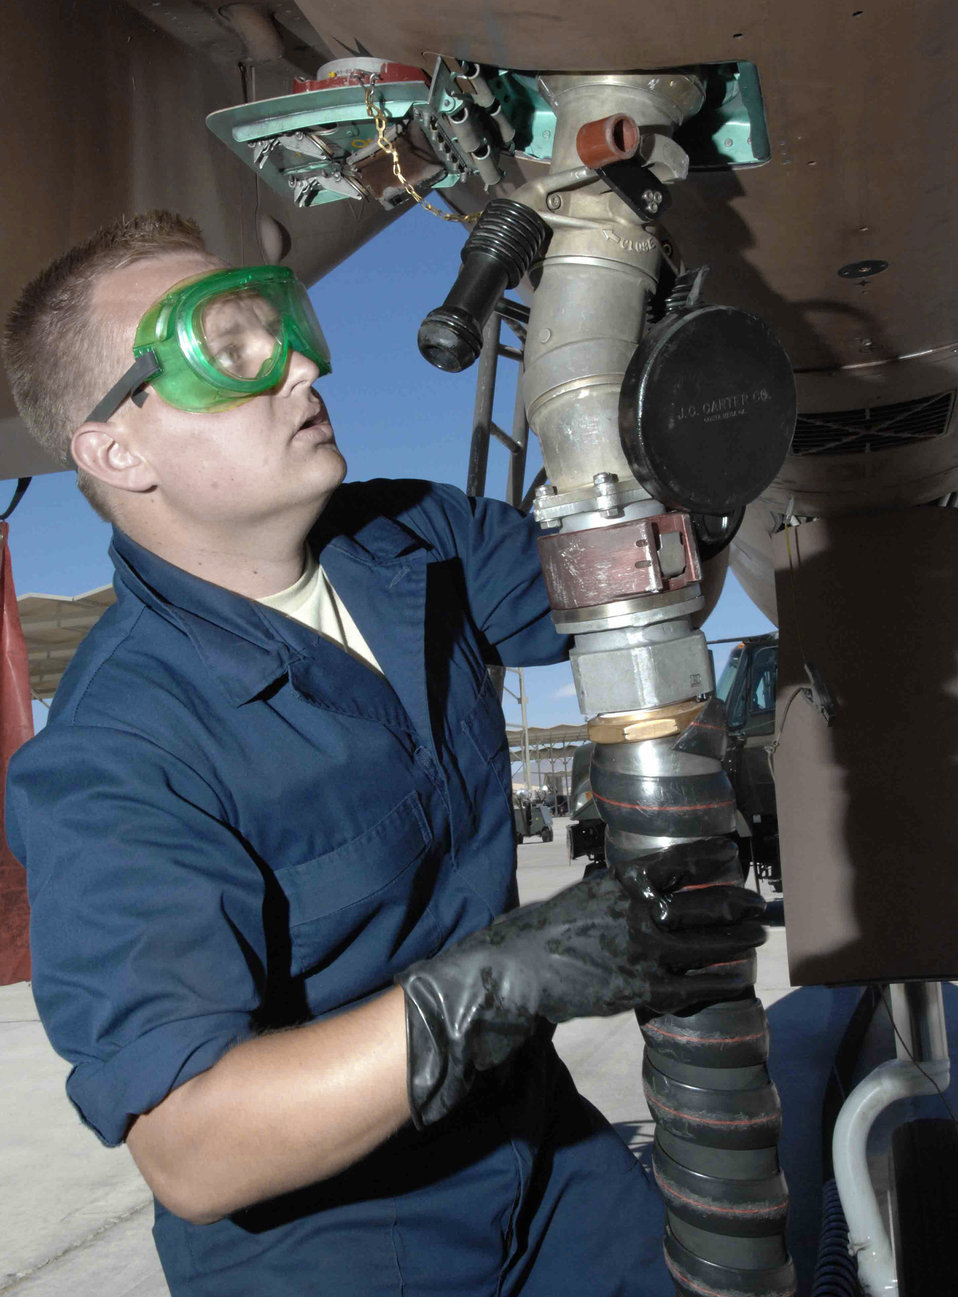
Nellis to stand up new aircraft maintenance squadron

Staff Sgt. Jason Payne refuels an F-15 Eagle at Nellis Air Force Base, Nev. Sergeant Payne is an F-15 crew chief in the 926th Aircraft Maintenance Squadron. The 926th Group is an Air Force Reserve classic associate unit that supports the active-duty Air Air Force Warfare Center at Nellis with Air Force reservists.